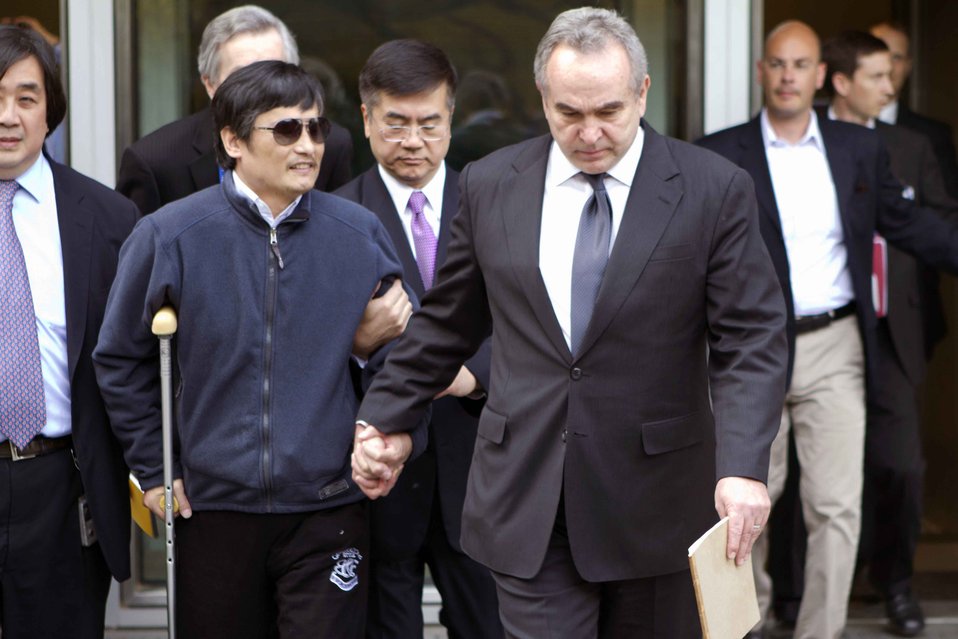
Assistant Secretary Campbell With Chen Guangcheng

Assistant Secretary of State for East Asian and Pacific Affairs Kurt Campbell with Chen Guangcheng at the U.S. Embassy in Beijing, China, on May 1, 2012. U.S. Ambassador to China Gary Locke is also pictured.